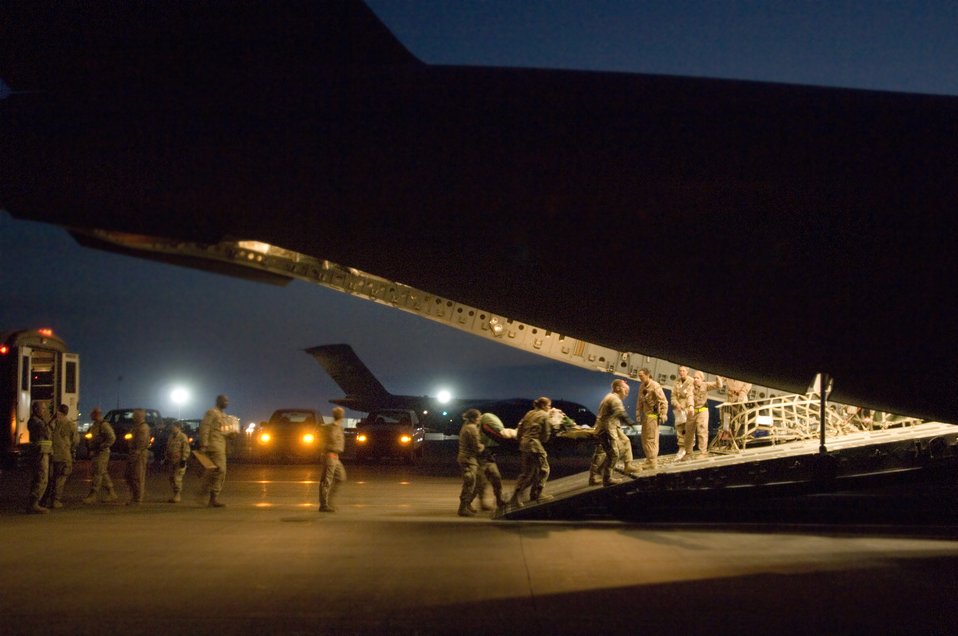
Medical teams provide priceless gift

Contingency aeromedical staging facility team members prepare a critical-care patient Feb. 14 for transport on C-17 Globemaster III to Landstuhl, Germany, where he will receive further care for his wounds at Balad Air Base, Iraq.